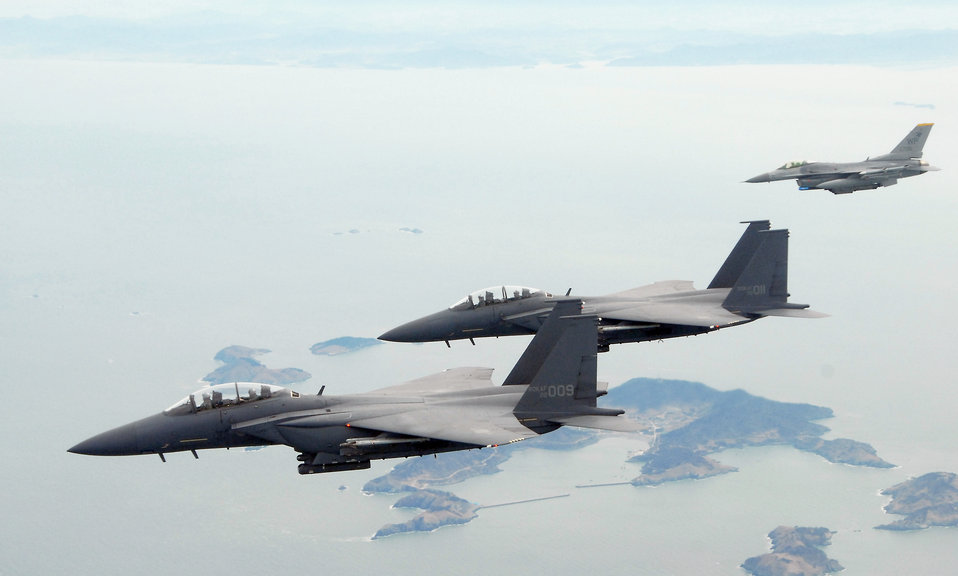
Buddy Wing brings Kunsan, South Korean airmen closer

F-15K Slam Eagles from the South Korean air force's 11th Tactical Fighter Wing out of Daegu Air Base, fly with an F-16 Fighting Falcon March 11 over Kunsan Air Base, South Korea. The three aircraft were participating in the Buddy Wing program, an operation designed to increase U.S. Air Force and South Korean air force interoperability.